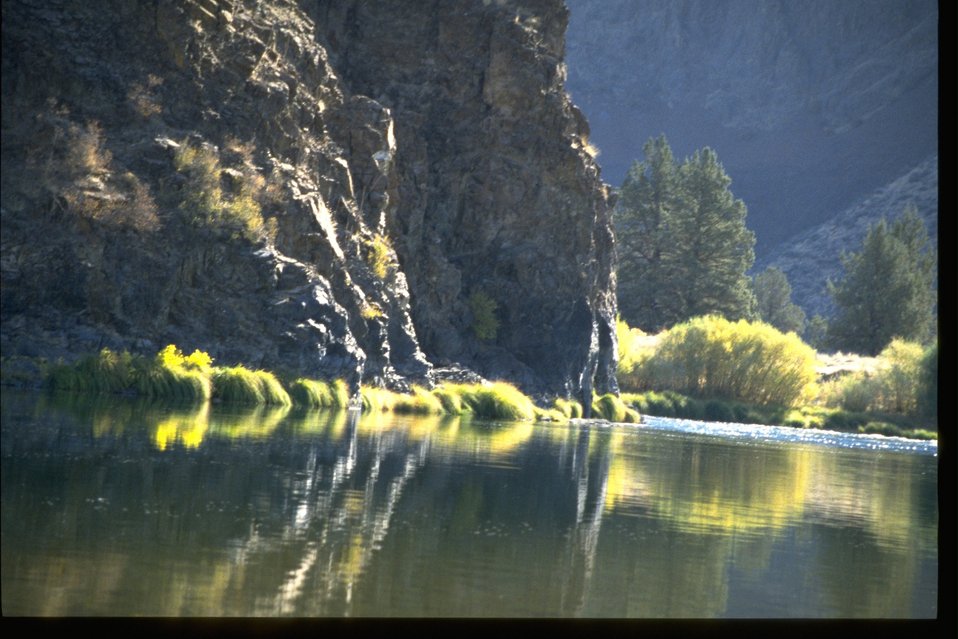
Vegetation along the banks of the John Day River under cliffs near Bridge Creek.